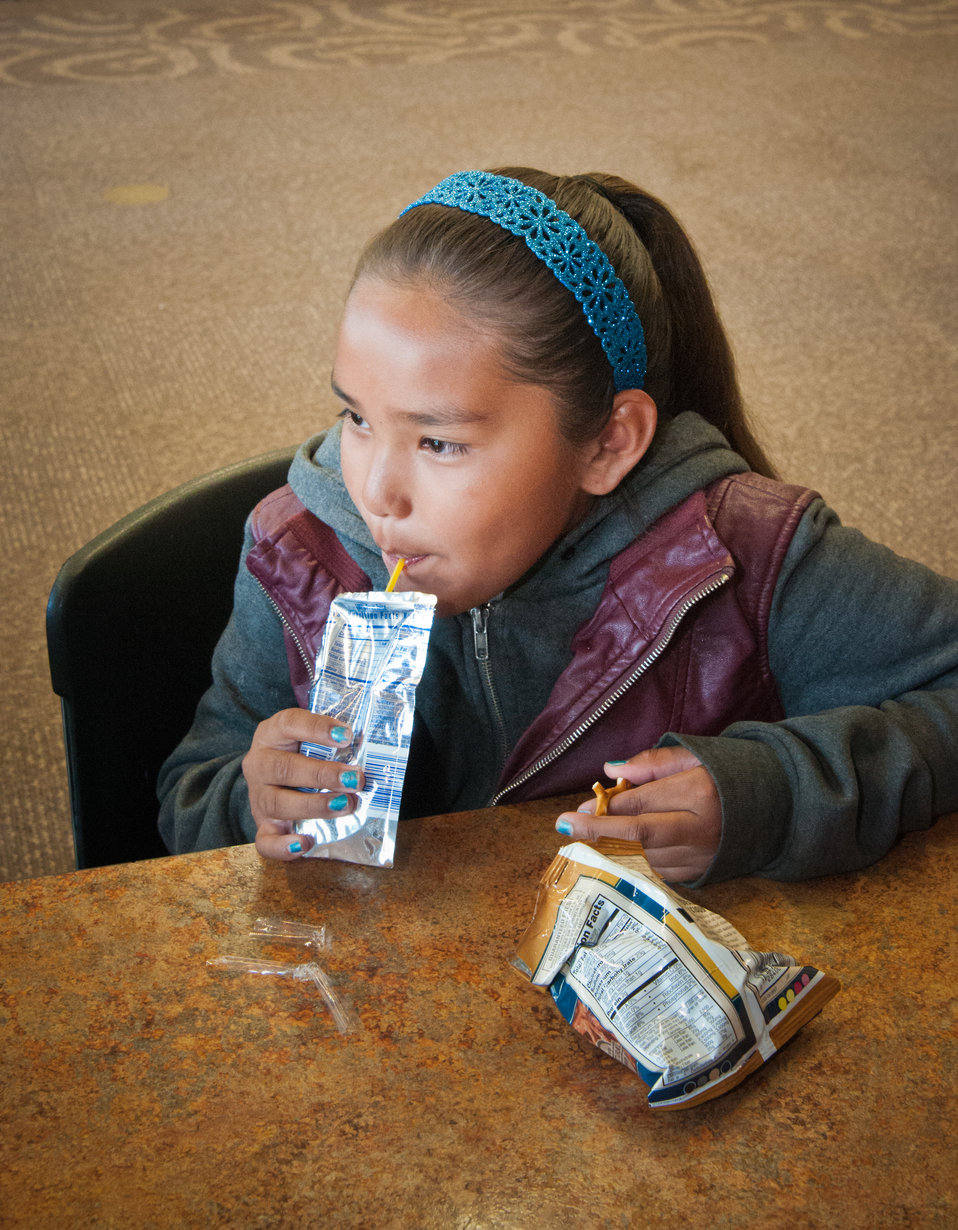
Sarafina Chackee enjoys a snack at the Boys and Girls Club of the Southern Ute Indian Tribe in Ignacio, CO on Thursday, Jun. 13, 2013. The U.S. Department of Agriculture’s (USDA) Food and Nutrition Service (FNS) assists the club with healthy snacks while the children are participating in programs at the Southern Ute Community Center.